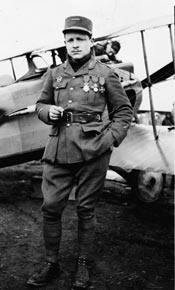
Maj. Raoul G. Lufbery

Early Years -- Maj. Raoul G. Lufbery